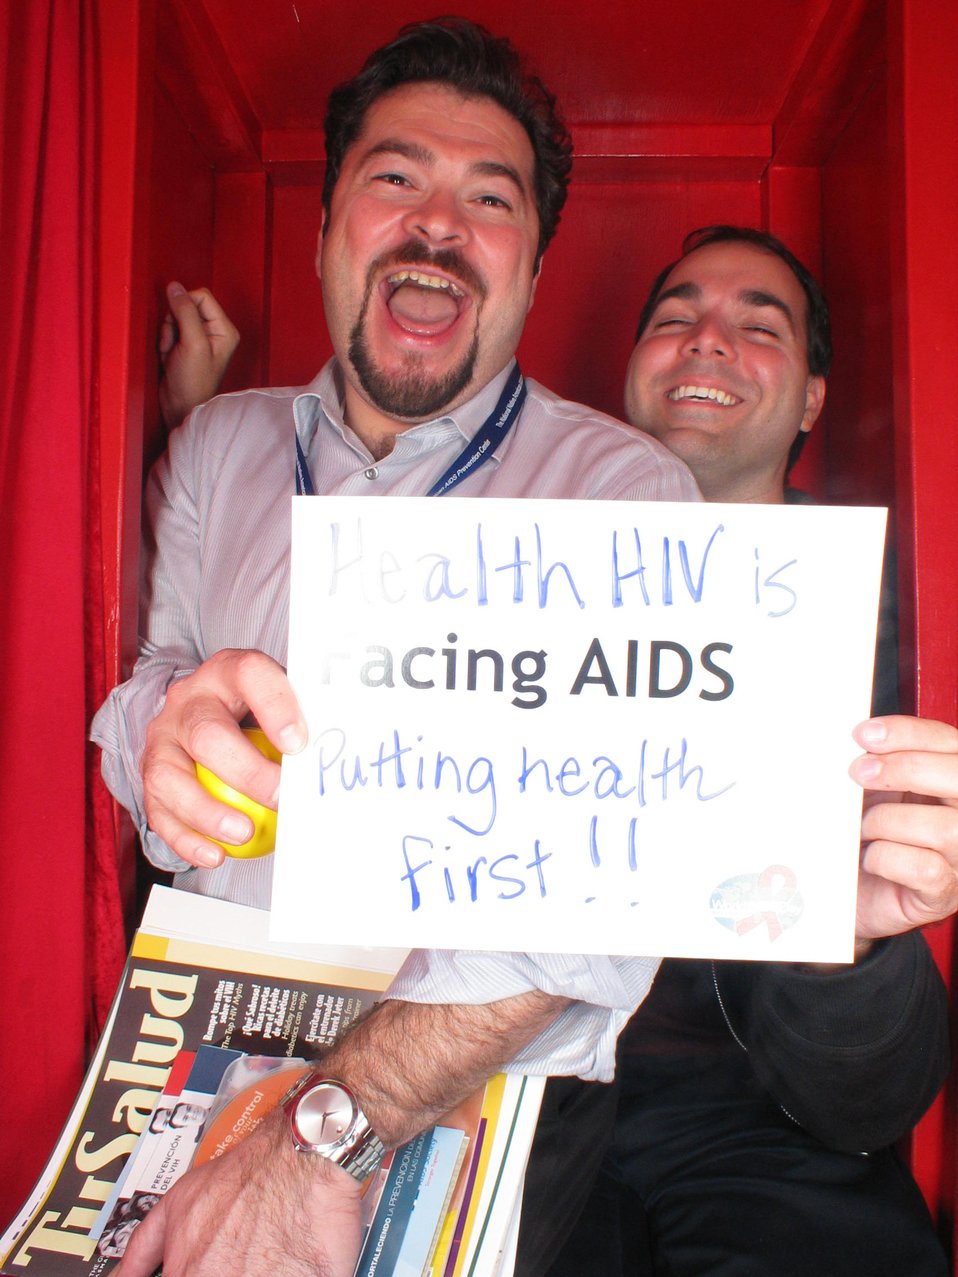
Facing AIDS is putting health first!